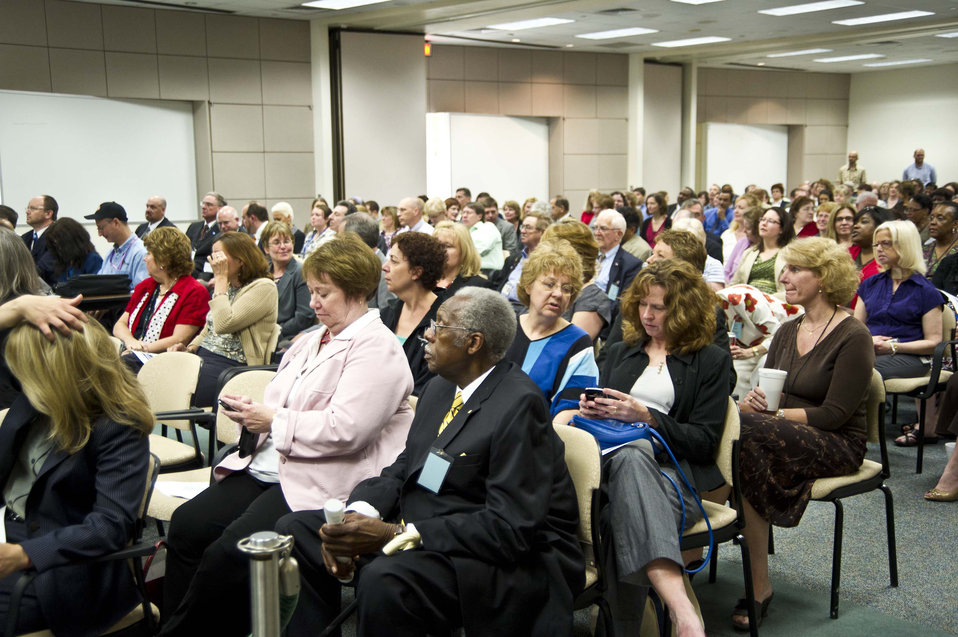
U.S. Department of Agricultue (USDA) Animal and Plant Health Inspection Service (APHIS) employees listen to a panel of former APHIS Administrators as part of the APHIS 40th Anniversary celebration activities on May 16, 2012.